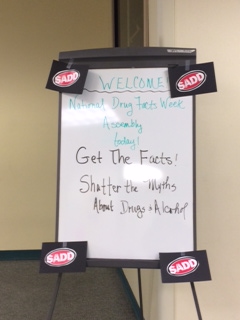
Teens Making a Statement on Drug Abuse

Students Against Destructive Decisions (SADD)
presented an assembly with guest speaker Amy Bollaert, Coordinator of the Fairbanks Prevention Coalition, as part of SADD's 'Signature Events' program in Fairbanks, Alaska